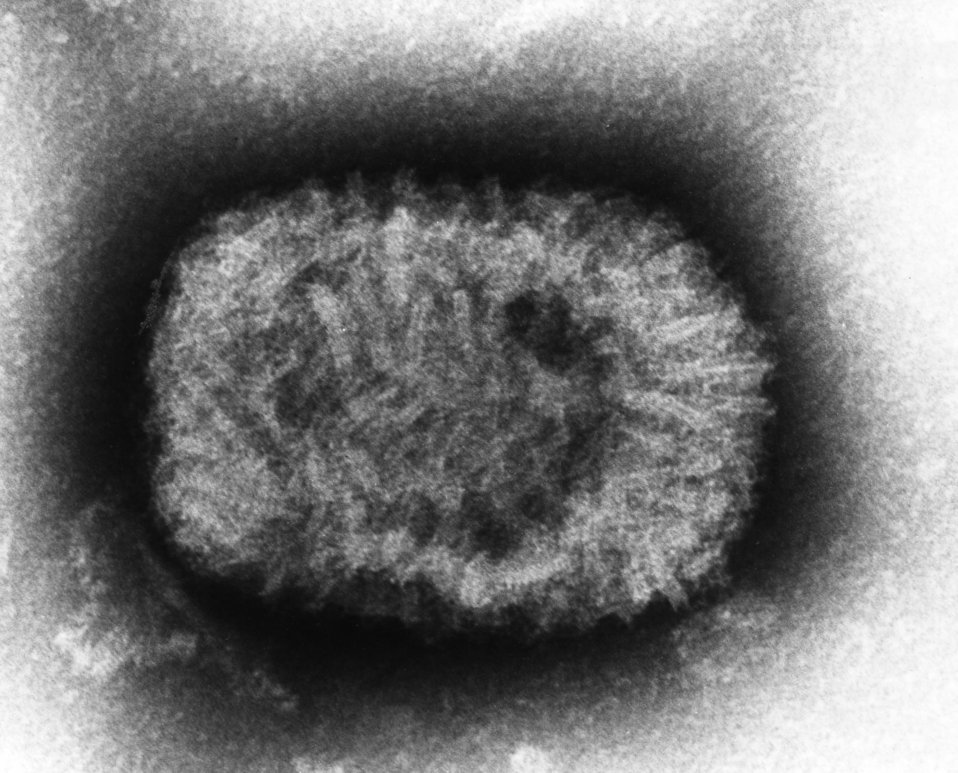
Highly magnified at 310,000X, this negative-stained transmission electron micrograph (TEM) depicted a smallpox (variola) virus particle, or a single 'virion'. Variola is a double-stranded DNA virus in the genus, Orthopoxvirus. The virus enters the body via the oropharynx, or respiratory mucosa, spreads systemically, and eventually localizes in small blood vessels of the dermis, which is the layer of skin located below the more superficial epidermis.